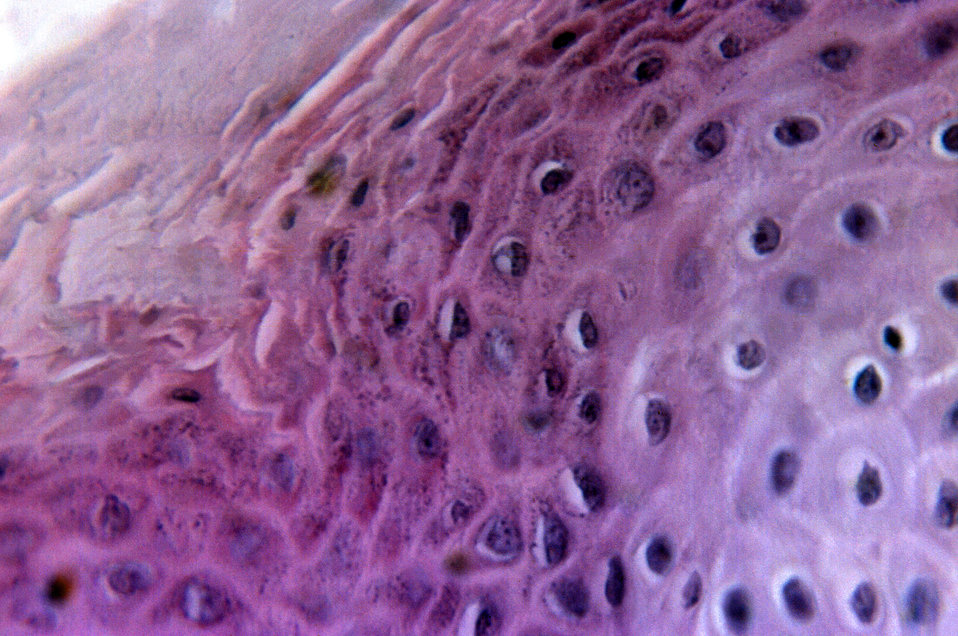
Magnified 500X, this photomicrograph depicts some of the cytoarchitectural pathologic changes found in a sample of skin tissue from a eczema vaccinatum lesion, which had manifested itself after this patient had received a smallpox vaccination.